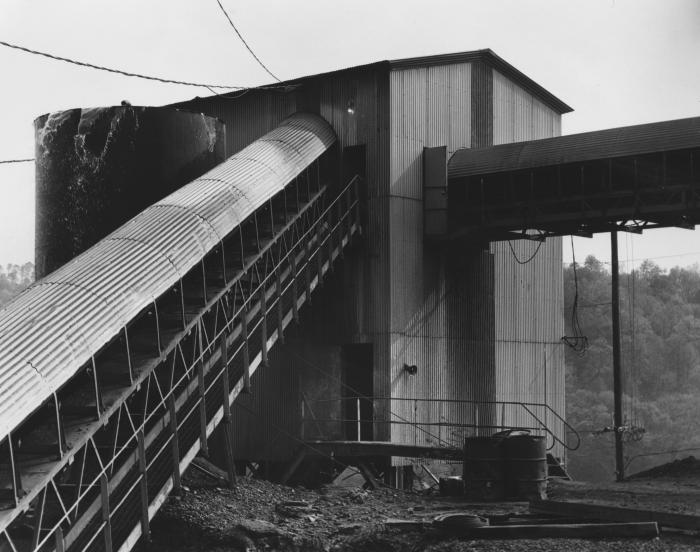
This late 1970s photograph of a transfer station was taken during a NIOSH study at a stone quarry.